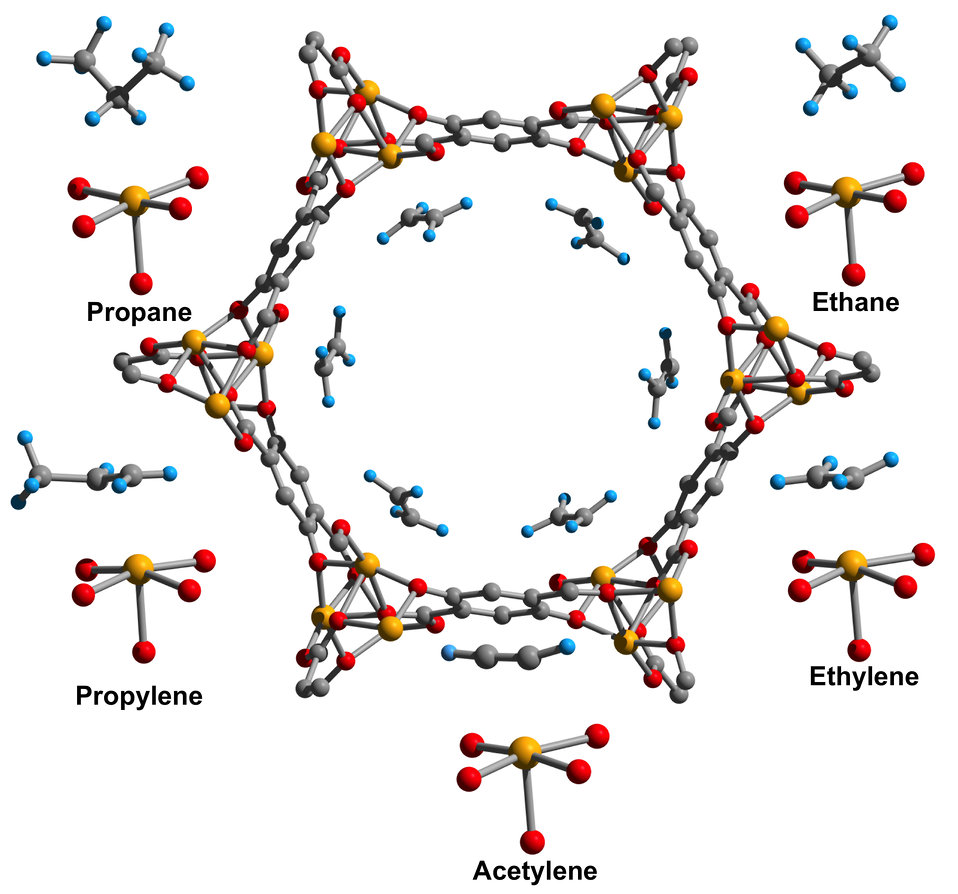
Metal-Organic Framework

Iron projecting into the pore of the tubelike metal-organic framework (center, looking down its roughly nanometer-wide opening) attracts the light hydrocarbon molecules that surround it to varying degrees. These varied attraction levels could make the framework more efficient at hydrocarbon separation than current refinery processes.